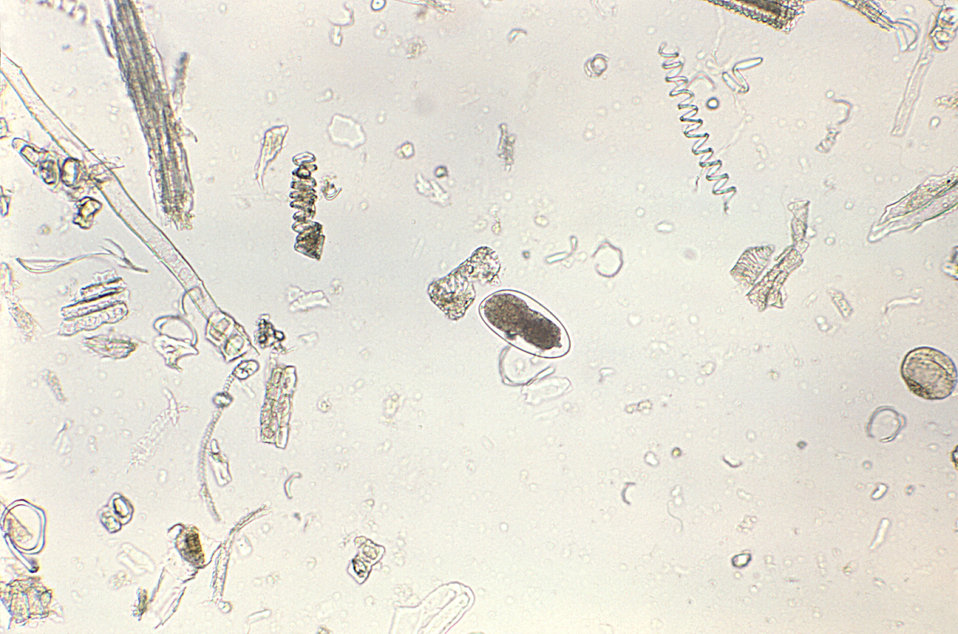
Magnified 128X, this photomicrograph depicted an egg from the parasitic nematode, Trichostrongylus.